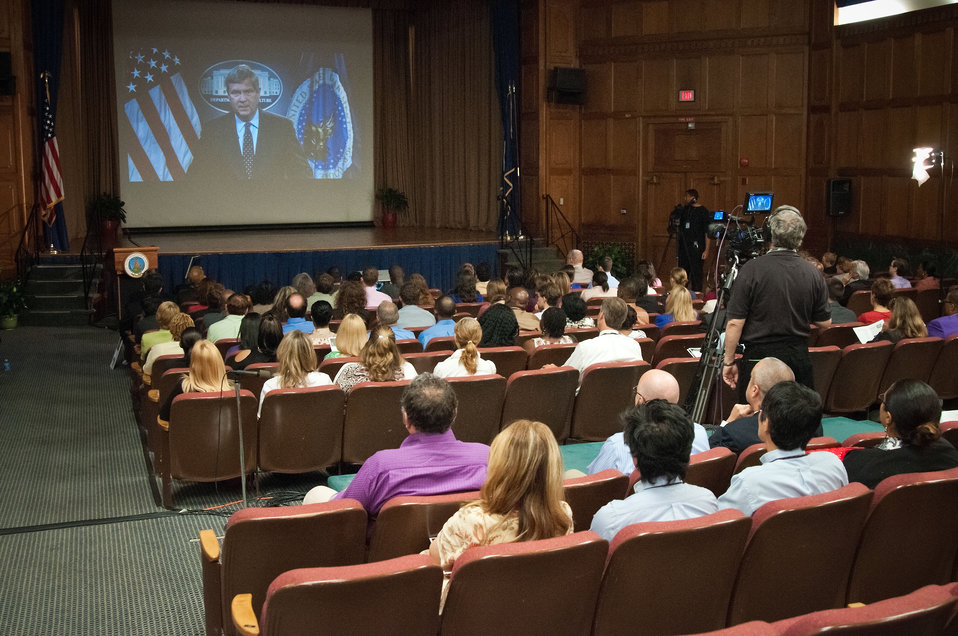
United States Department of Agriculture employees watch a video message of Agriculture Secretary Tom Vilsack at the Lesbian, Gay, Bisexual and Transgender (LGBT) Pride Observance, “The Sum of Us: Lesbian, Gay, Bisexual and Transgender Pioneers” at the United States Department of Agriculture in Washington, D.C., Thursday, June 7, 2012.